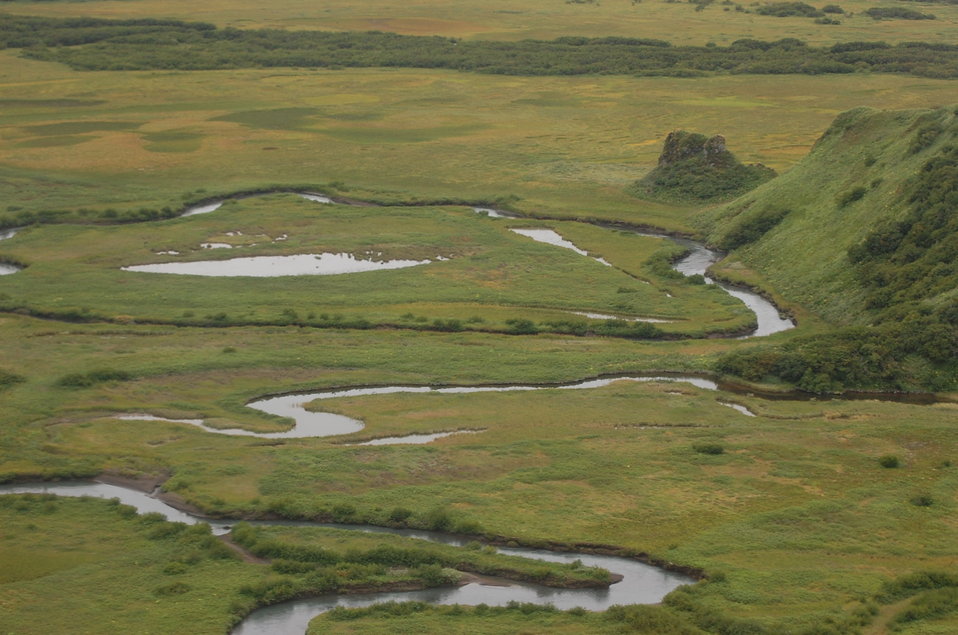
Unimak Landscapes

SE Unimak Island, Alaska Maritime National Wildlife Refuge